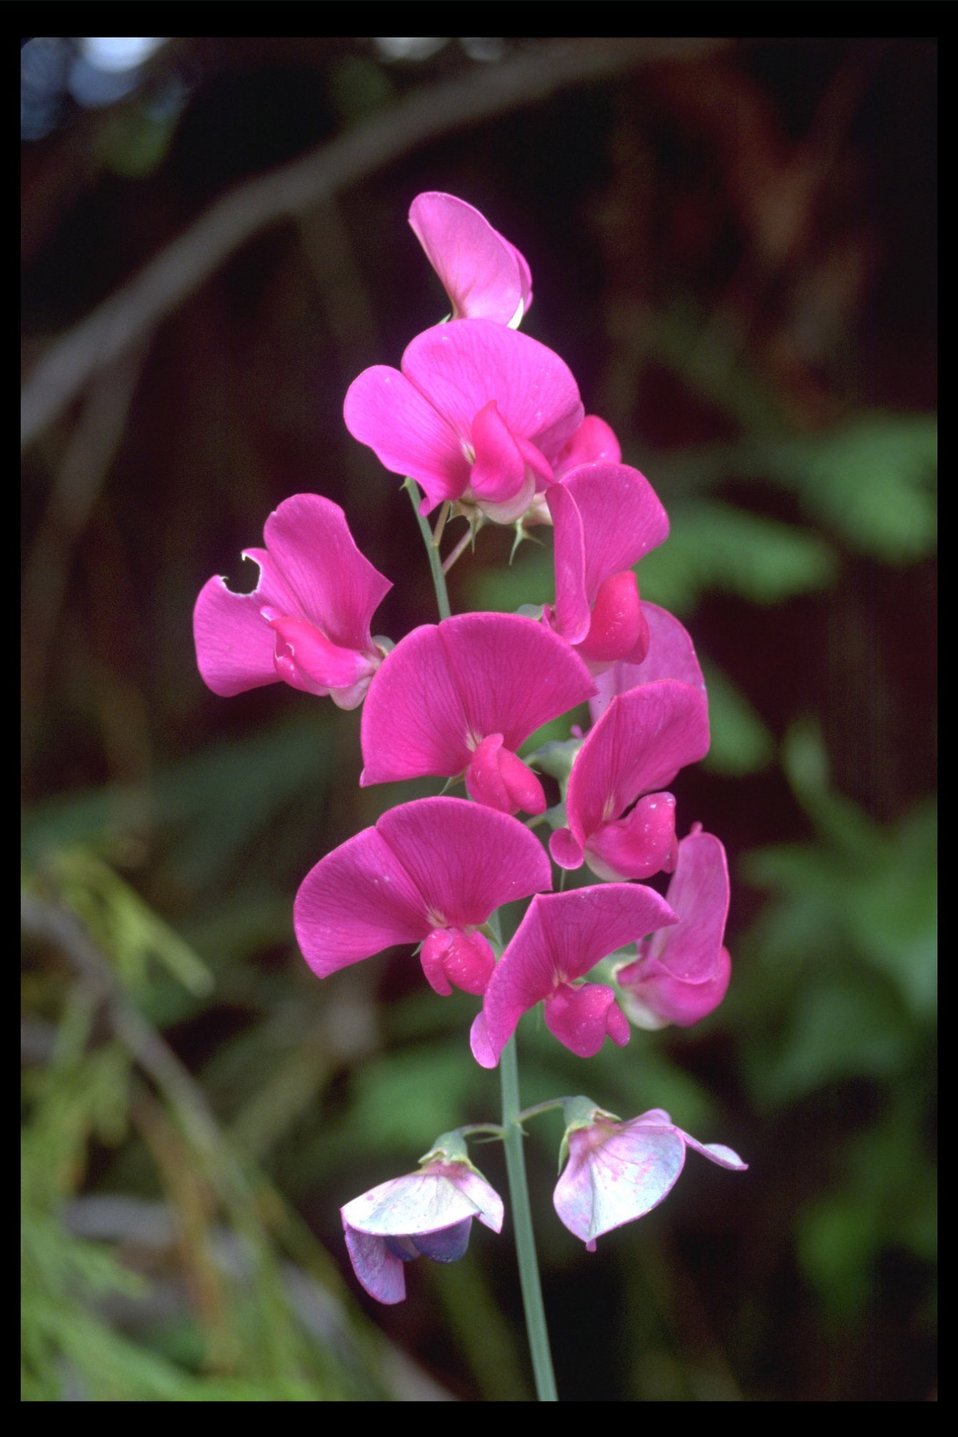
Wild Sweetpea (Lathyrus latifolius) in Medford.